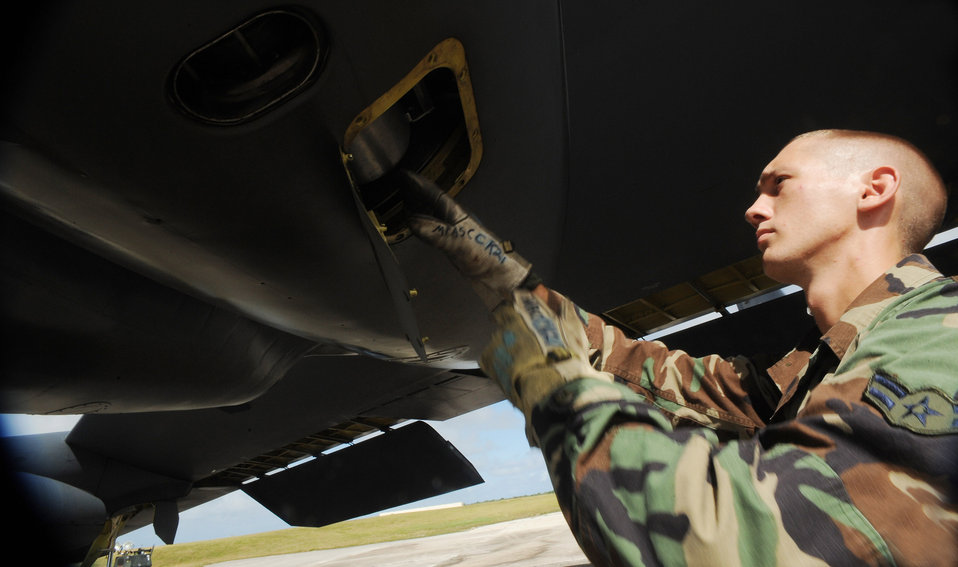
Airman 1st Class Michael Brand, 36th Expeditionary Aircraft Maintenance Squadron crew chief, loads a